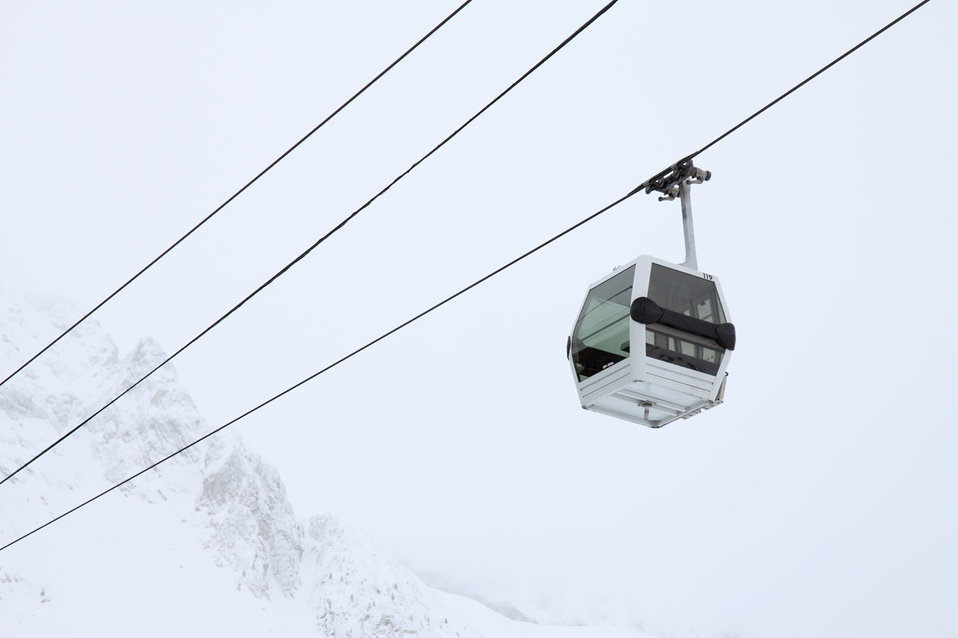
Gondola lift

Empty cable car with a mountain.